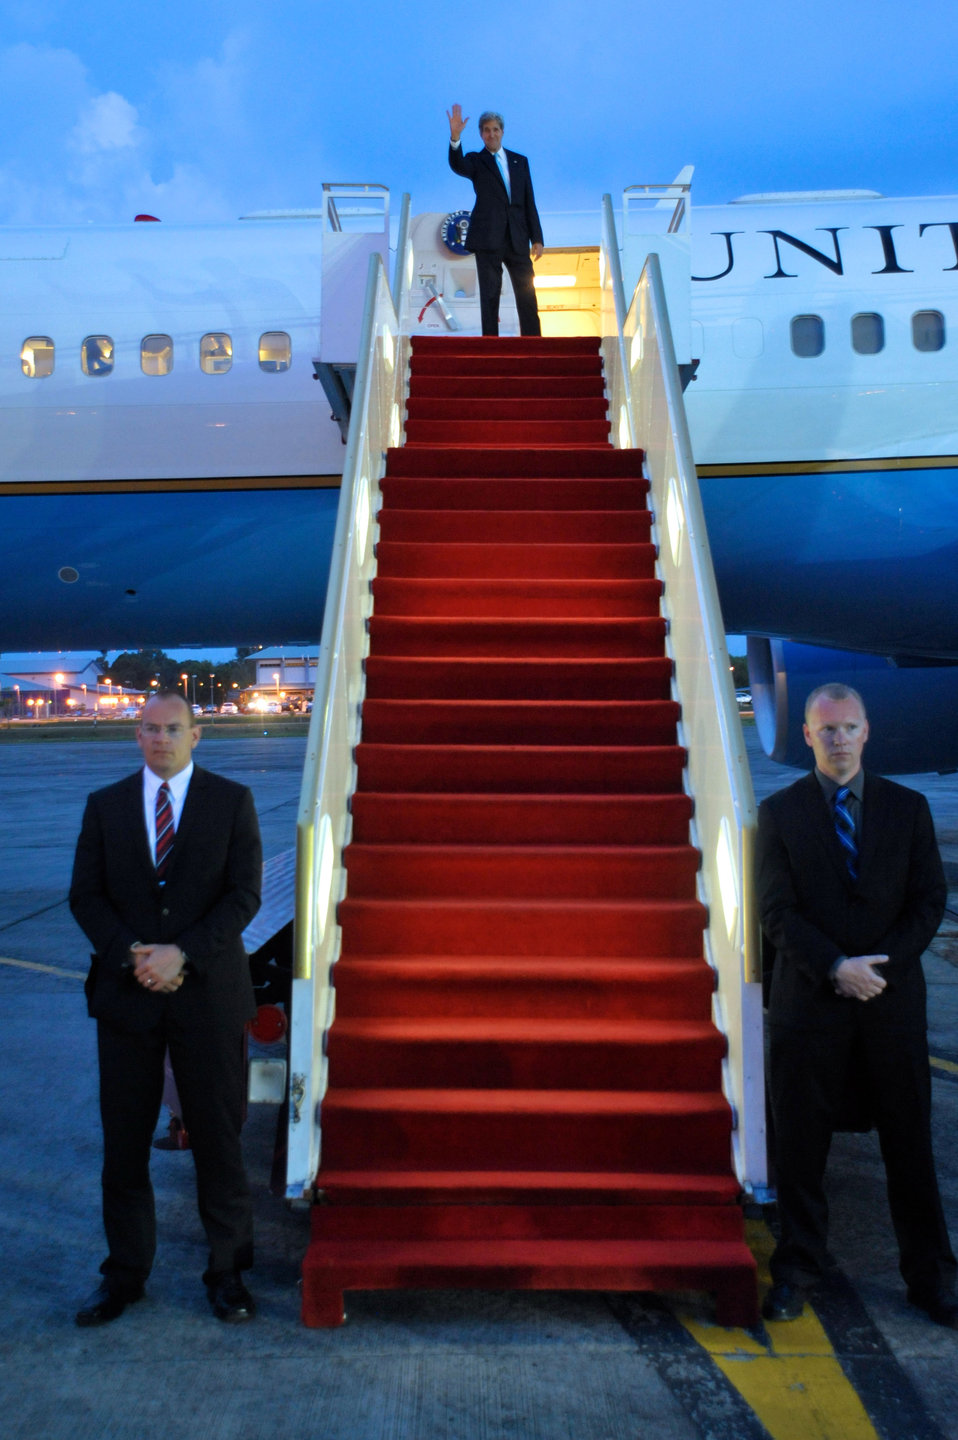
Secretary Kerry Bids Farewell to Brunei

U.S. Secretary of State John Kerry bids farewell to Brunei as he heads home to Washington, D.C., on July 2, 2013, following a 12-day, around-the-world trip.